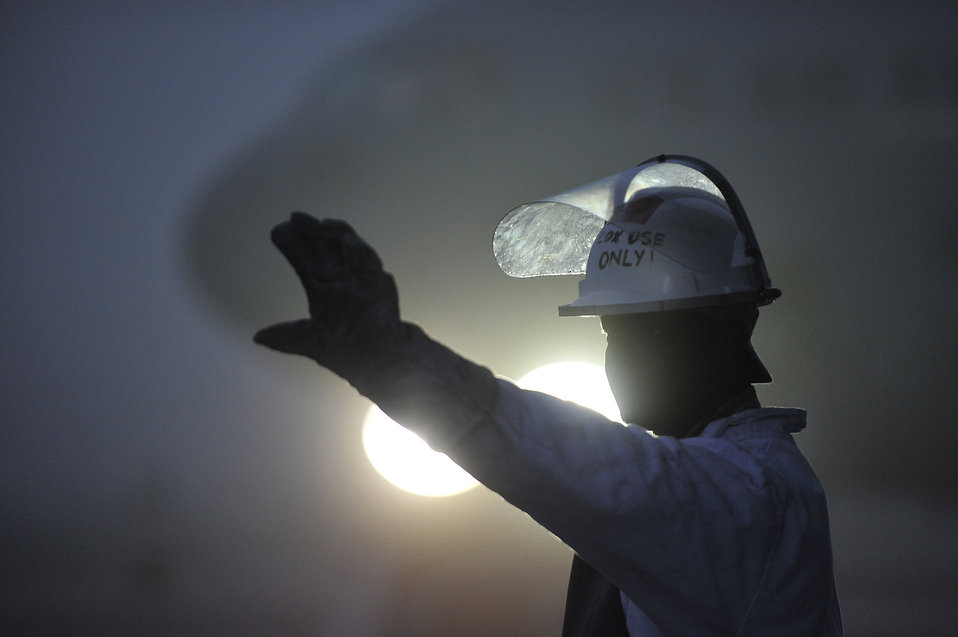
Hold it!

Staff Sgt. Rushad Stroman gestures to another Airman as liquid oxygen is loaded on a C-17 Globemaster III at Charleston Air Force Base, S.C., Dec. 14, 2009. Sergeant Stroman is an aircraft electrical environmental technician with the 437th Aircraft Maintenance Squadron.